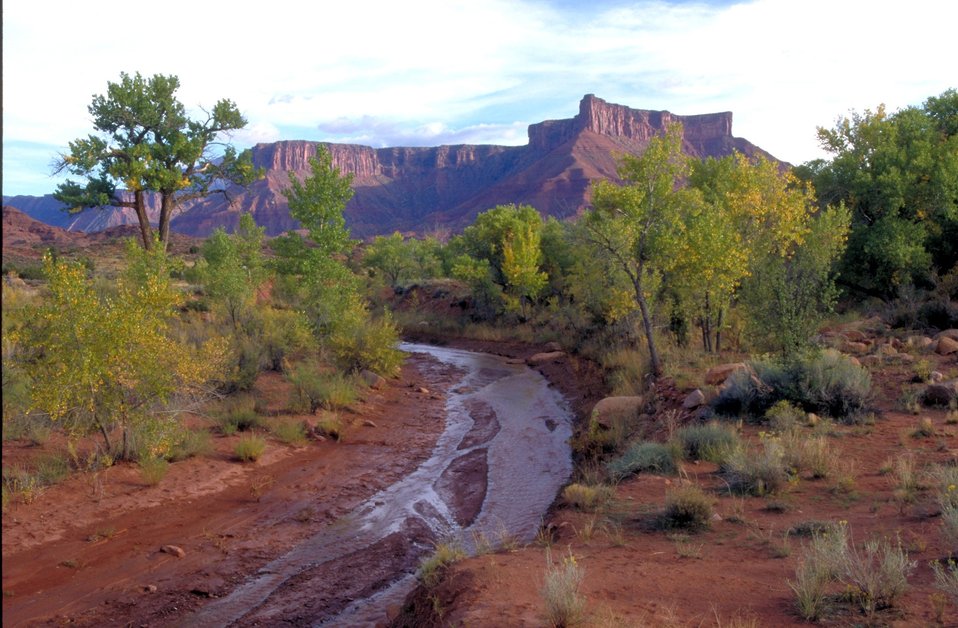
Mary Jane Canyon, Professor Creek with Adobe Mesa in background near Highway 128 near Moab, Utah.